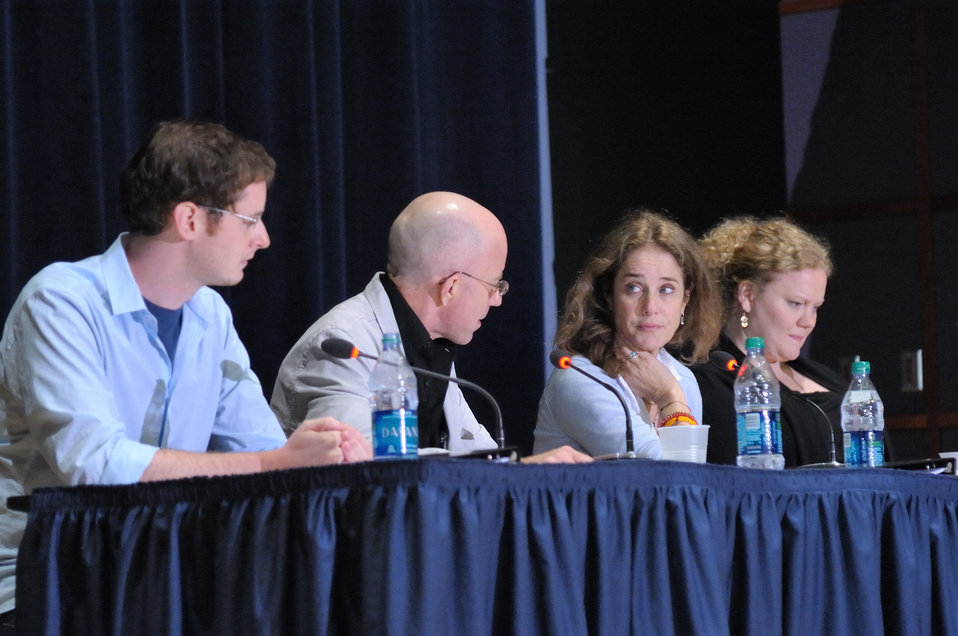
Actors - APP Aug 2011

Actors perform at NIDA’s Addiction Performance Project on the NIH Campus, Aug 5; (L-R): Bob Braswell, Arliss Howard, Debra Winger, Sara Waisanen